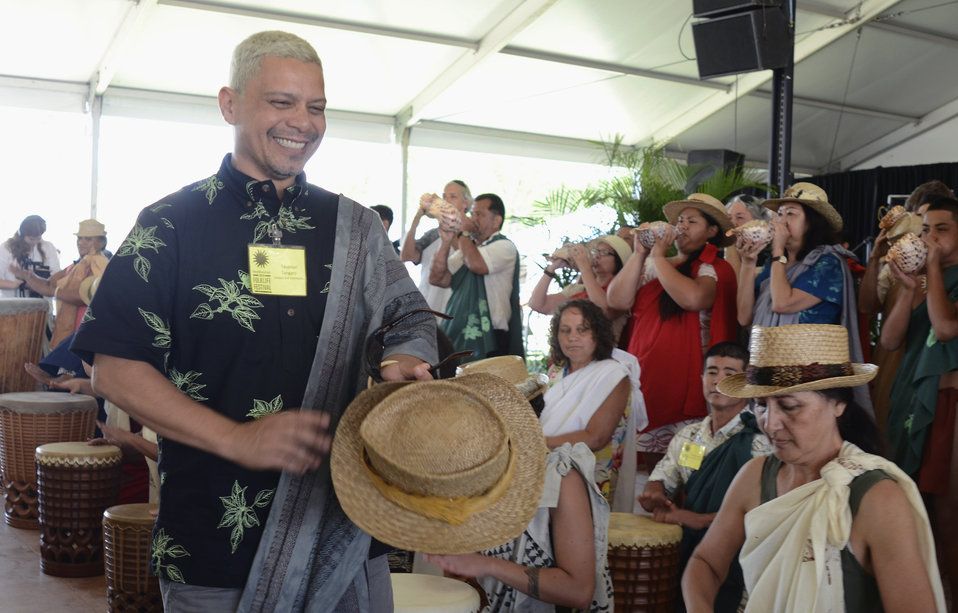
University of Hawaii's Tuahine Troupe performs at the opening ceremony for the 2012 Smithsonian Folklife Festival in Washington, D.C. on Wednesday, June 27, 2012. This year’s festival features three themes; “Creativity and Crisis” celebrates the 25th anniversary of the AIDS Memorial Quilt, “Citified,” explores the rich culture and community of neighborhoods east of the Anacostia, and the third “Campus and Community” celebrates 150 years of USDA and the Land-Grant university system.